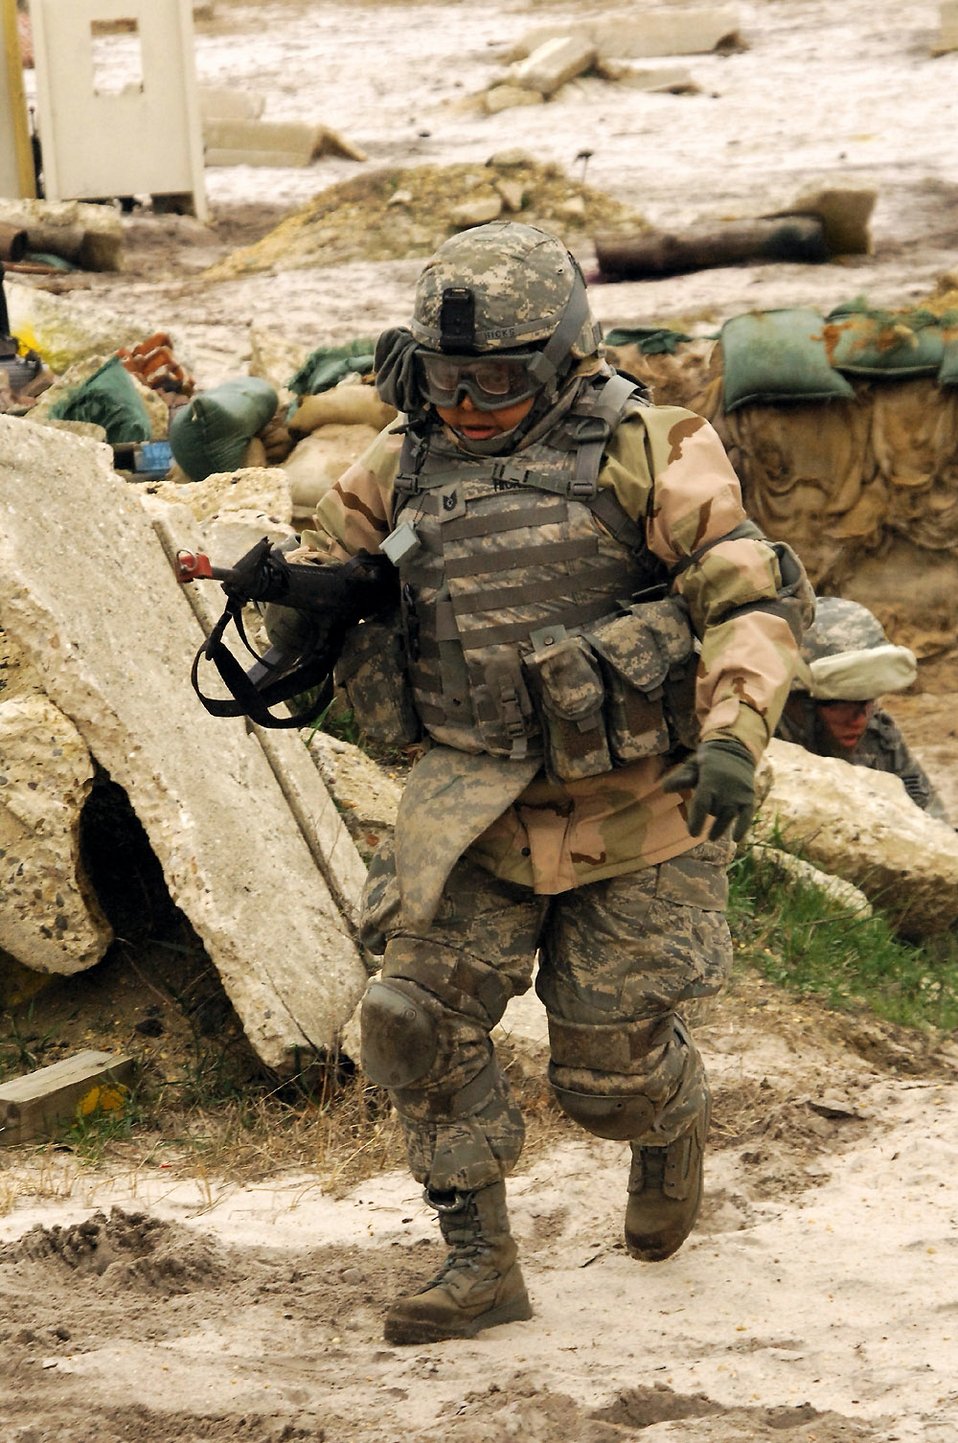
Airmen master Soldier skills training

Tech Sgt. Mercedes Hicks runs to the next point during Individual Movement Technique training at the Fort Dix, N.J., improvised explosive device range. The training teaches troops how to conduct maneuvers in an unknown, often hostile, environment. Sergeant Hicks and her fellow Airmen, members of USAF Class 25, are completing the Soldier Skills Training Course as they prepare for various deployments around the globe. There are about 75 Airmen currently going through the month-long course.